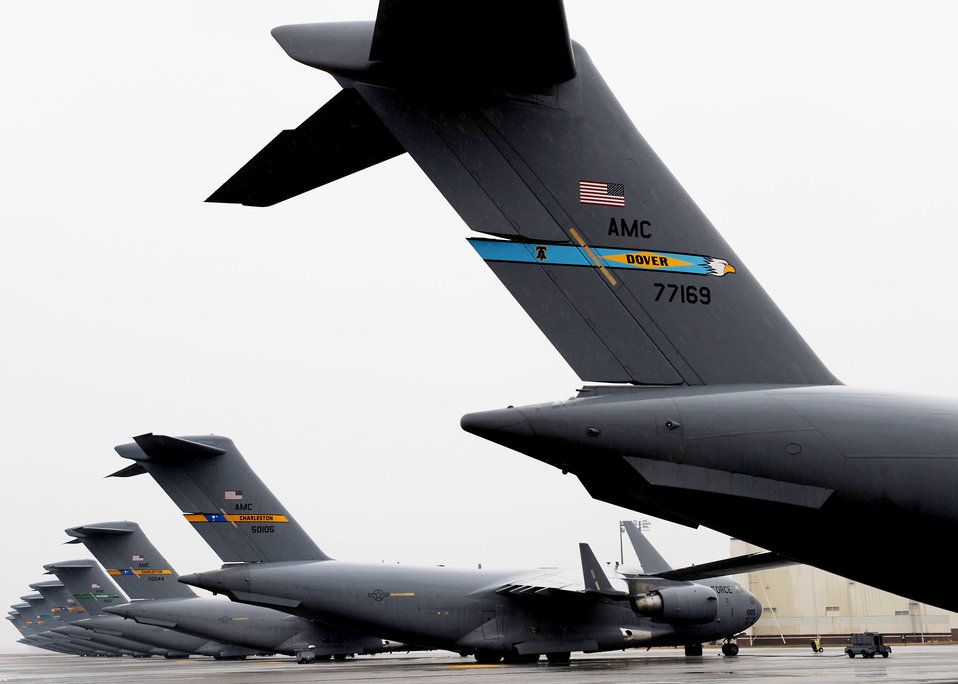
C-17's support Haiti mission

Several C-17 aircraft sit on the Charleston AFB flightline, Jan. 21. The planes are being used to support the humanitarian relief effort in Haiti. The Air Force's airlift capability enables the U.S. to respond immediately to any disaster domestically or worldwide. the U.S. is the only country with an aircraft fleet capable of providing this type of response.